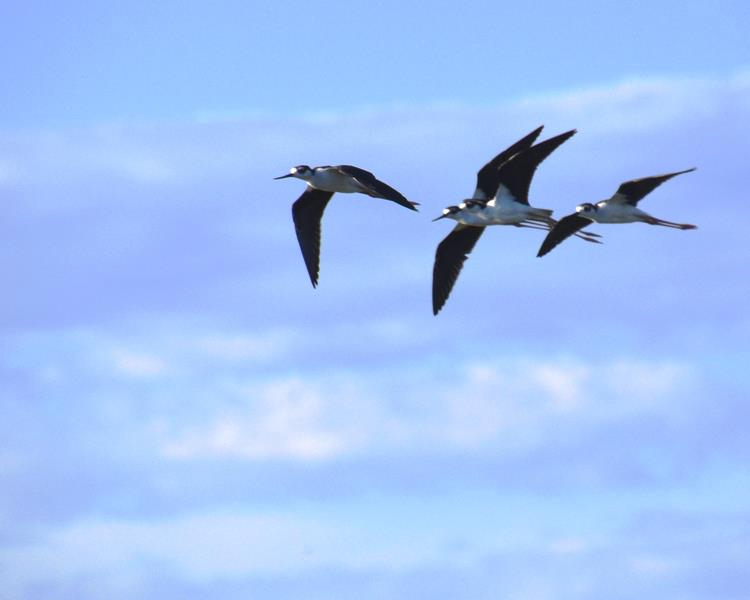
Black-necked Stilts

Bear River National Wildlife Refuge, UT
Spring 2012
(Photo: G. Rose/USFWS)

May 10, 2012 was International Migratory Bird Day.